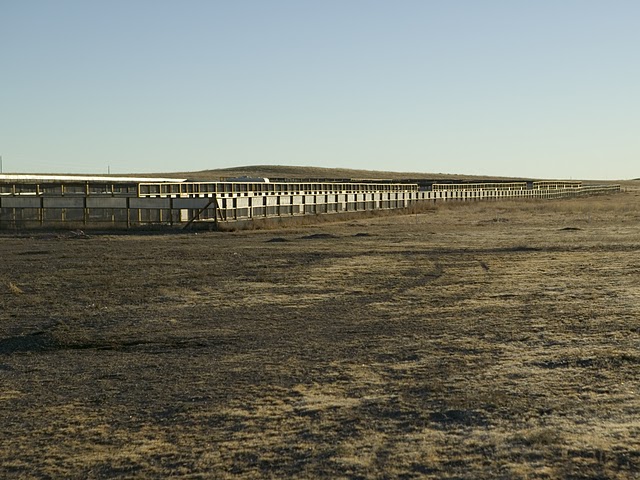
National Black-footed Ferret Conservation Center